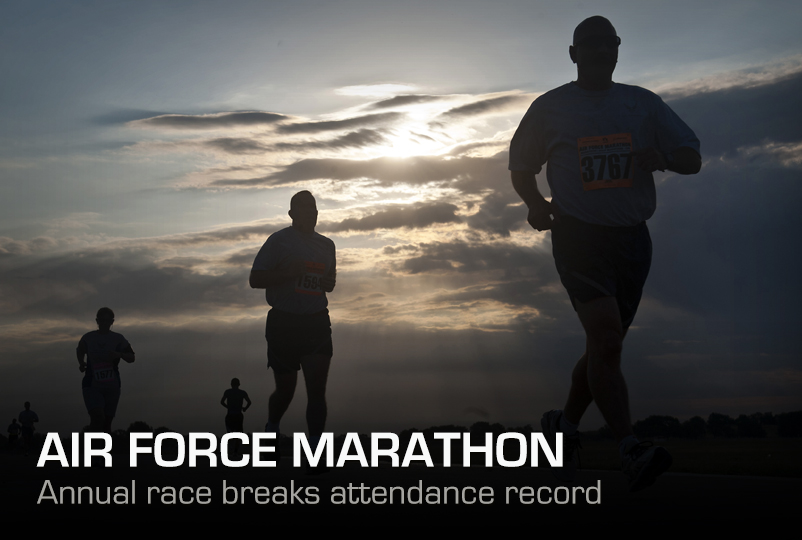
Air Force Marathon breaks another attendance record